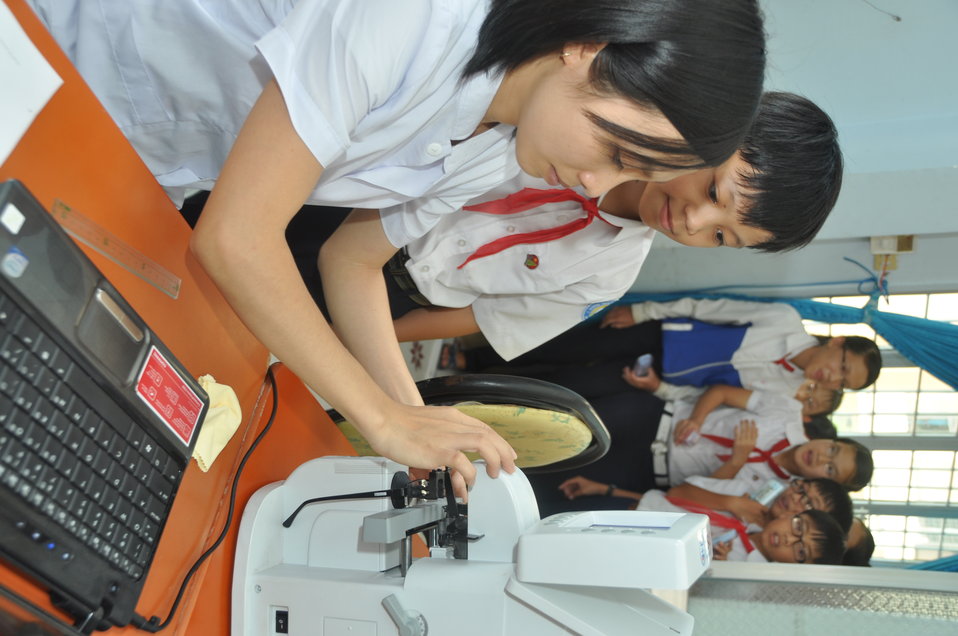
Checking new student eyeglasses in Kon Tum

Eyeglasses examination at Luong The Vinh School, Kon Tum Province